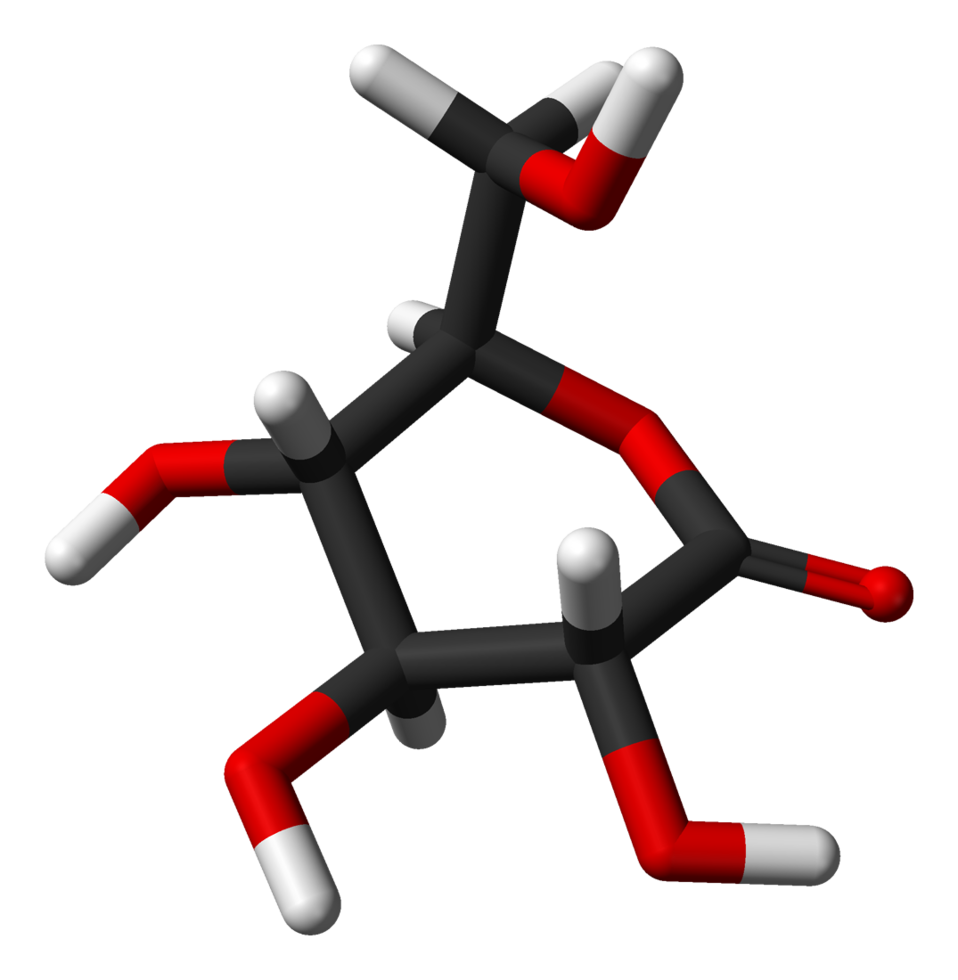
Stick model of the D-glucono delta-lactone molecule. Image based on a HF/3-21G minimised structure generated in Spartan